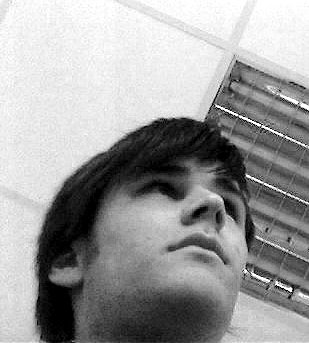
photo of Gabosh